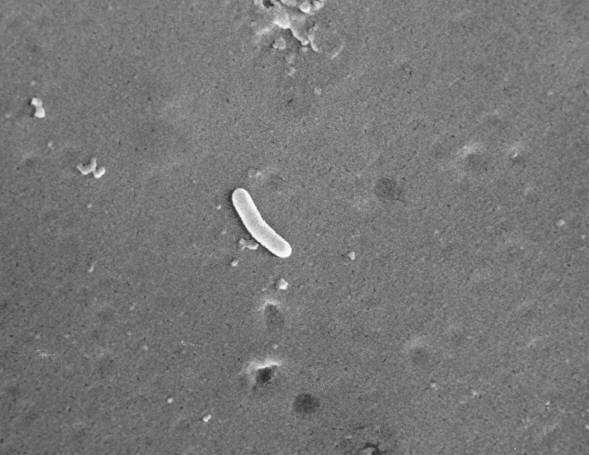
Scanning electron micrograph (SEM) of a Pseudomonas aeruginosa bacterium.